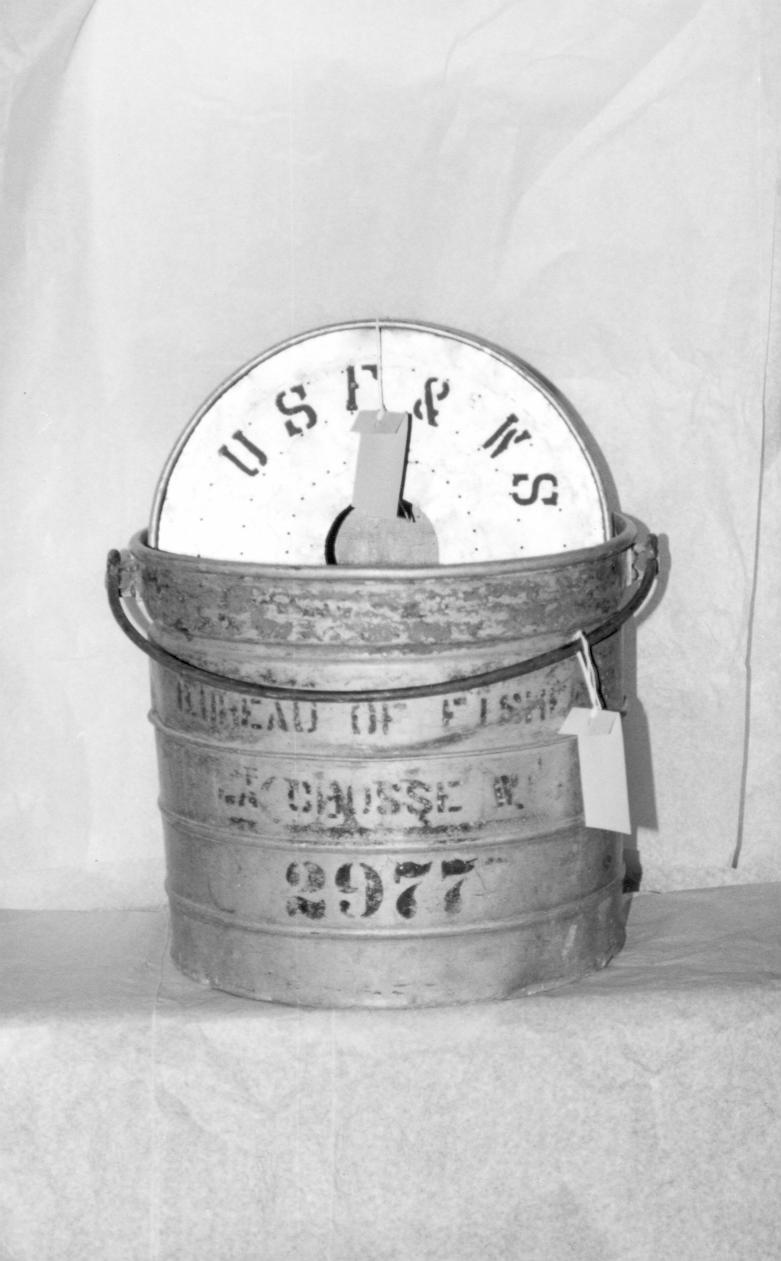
Fearnow pail #2977, LaCrosse